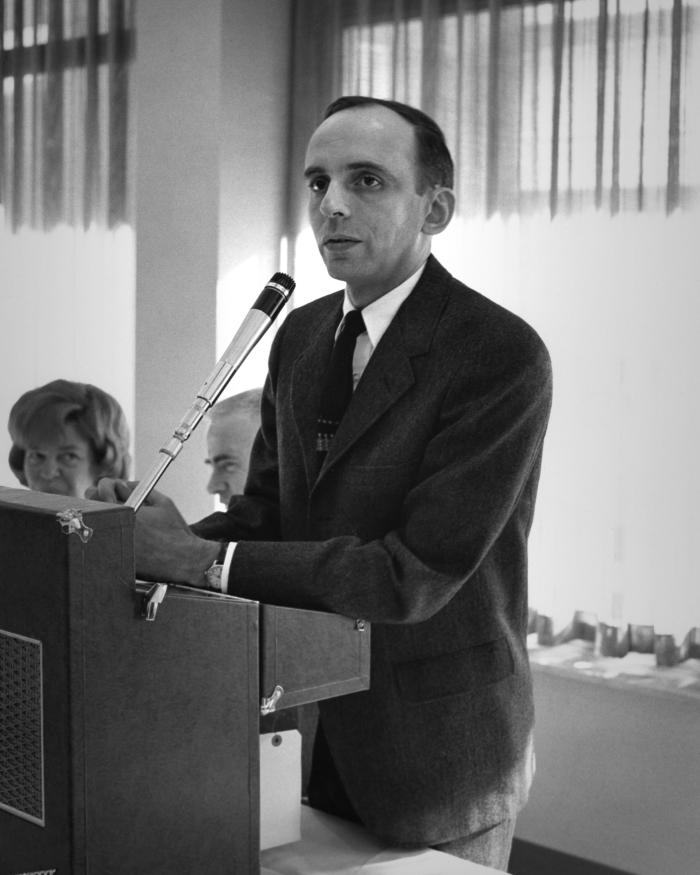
This historic photograph was taken during the Centers for Disease Control (CDC) Directorship of David J. Sencer, M.D., M.P.H., who held the position from 1966 until 1977.